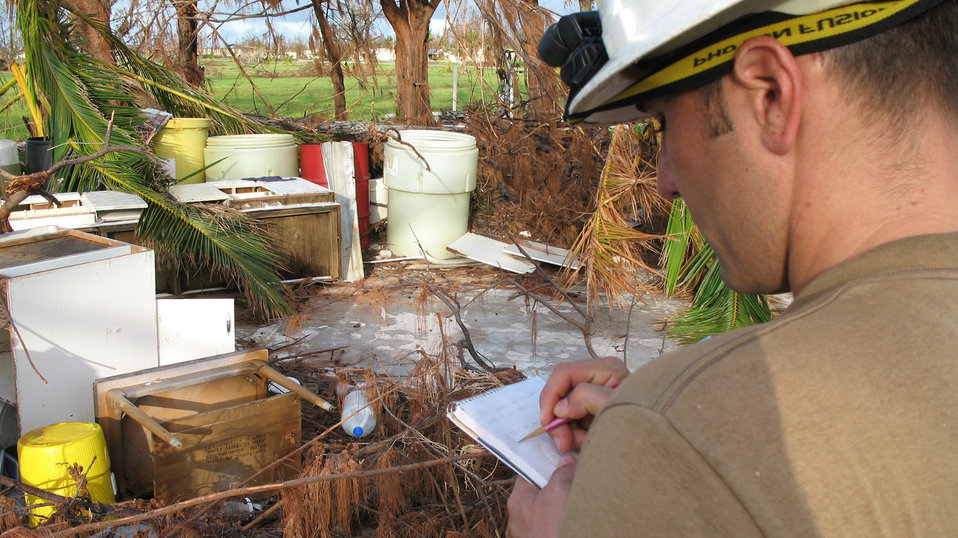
Taking note of the situation

Tech. Sgt. Jon Turney, 15th Civil Engineer Squadron, jots notes about the location formerly known as Bldg. 2100 at Wake Island Sept 15. Super Typhoon Ioke, which swept through with 155 mph winds and 190 mph gusts Aug. 31, ripped away the building's walls and roof. Sergeant Turney is part of the damage assessment team sent from Hickam Air Force Base, Hawaii, Sept. 13 to estimate the cost of the damage.